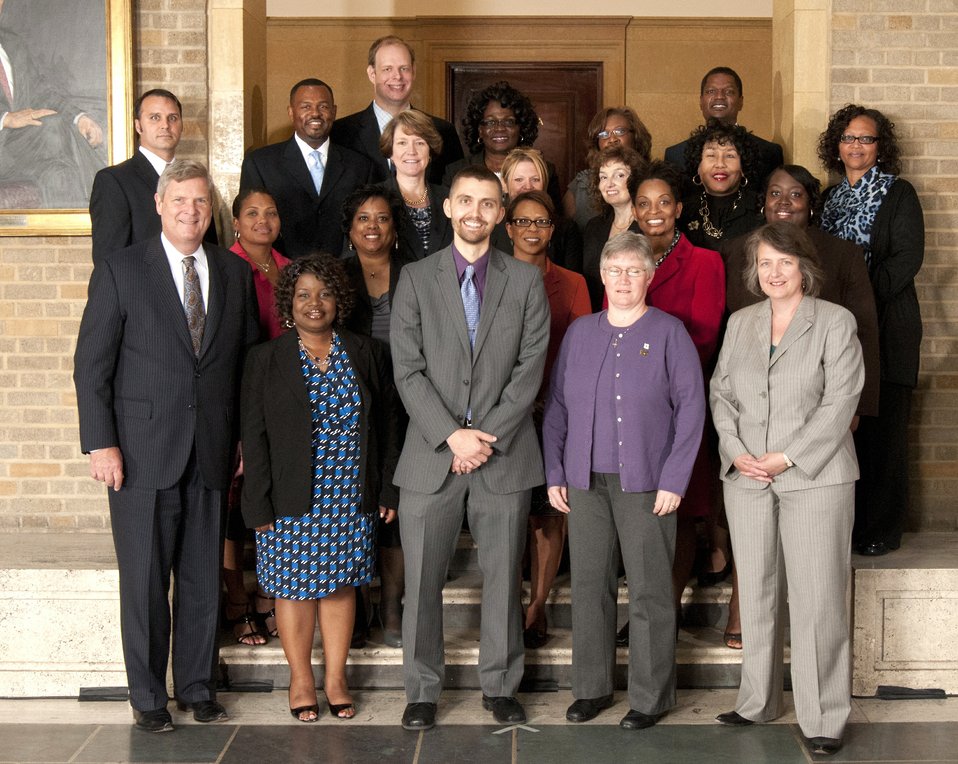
Agriculture Secretary Tom Vilsack and Deputy Agriculture Secretary Kathleen Merrigan with the Honor Award group Administative Solutions Project, Office of the Assistant Secretaty on the patio of the U.S. Department of Agriculture in Washington, D.C. on Wednesday, Sep. 12, 2012. The Administrative Solutions Project strived to find solutions to make USDA administrative operations more efficient and effective through an engaged and collaborative approach while raising union and employee concerns.